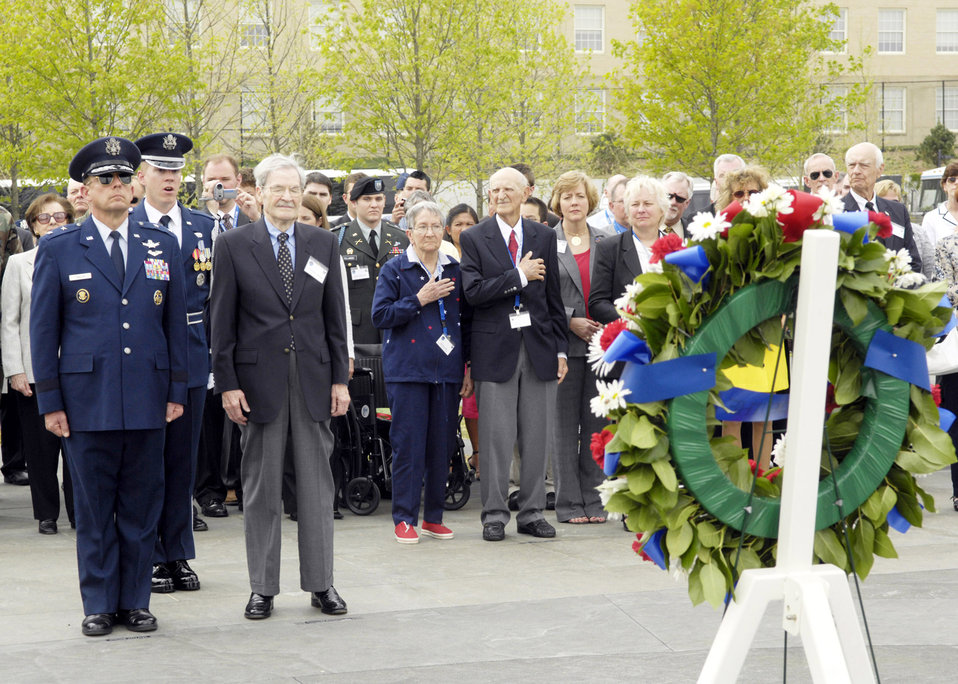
WWII bomber crew awarded Distinguished Flying Cross

Maj. Gen. Robert Smolen, Air Force District of Washington commander and former 1st Lt. Edward McNally pay their respects during a wreath-laying ceremony in honor of the